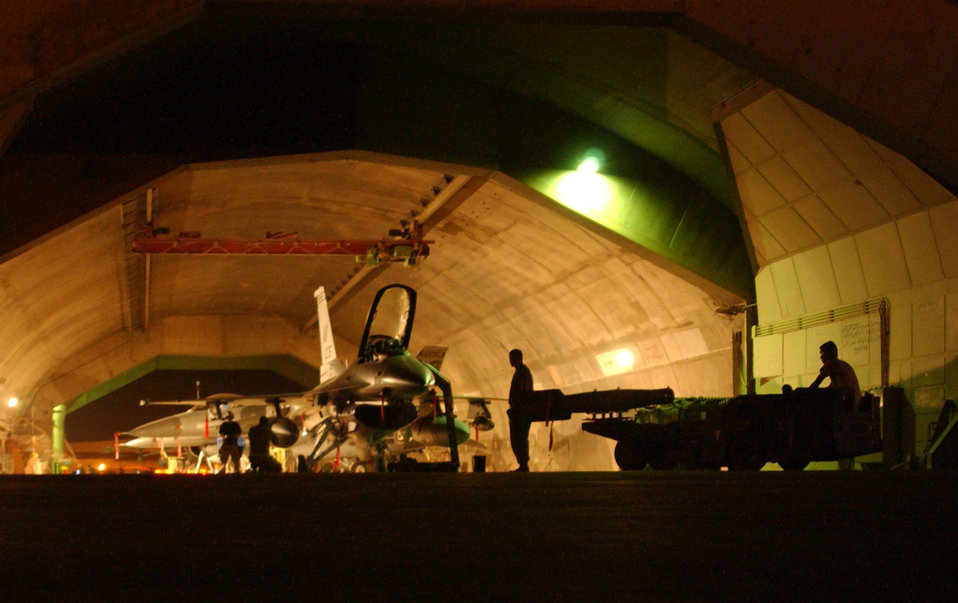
Aircraft swap helps maintain capabilities

Weapons loaders from the 332nd Expeditionary Aircraft Maintenance Squadron at Balad Air Base, Iraq, wait outside a hardened aircraft shelter for a maintainer's signal to proceed with the weapons load on a newly arrived Guard F-16 Fighting Falcon from Michigan Sept. 20.